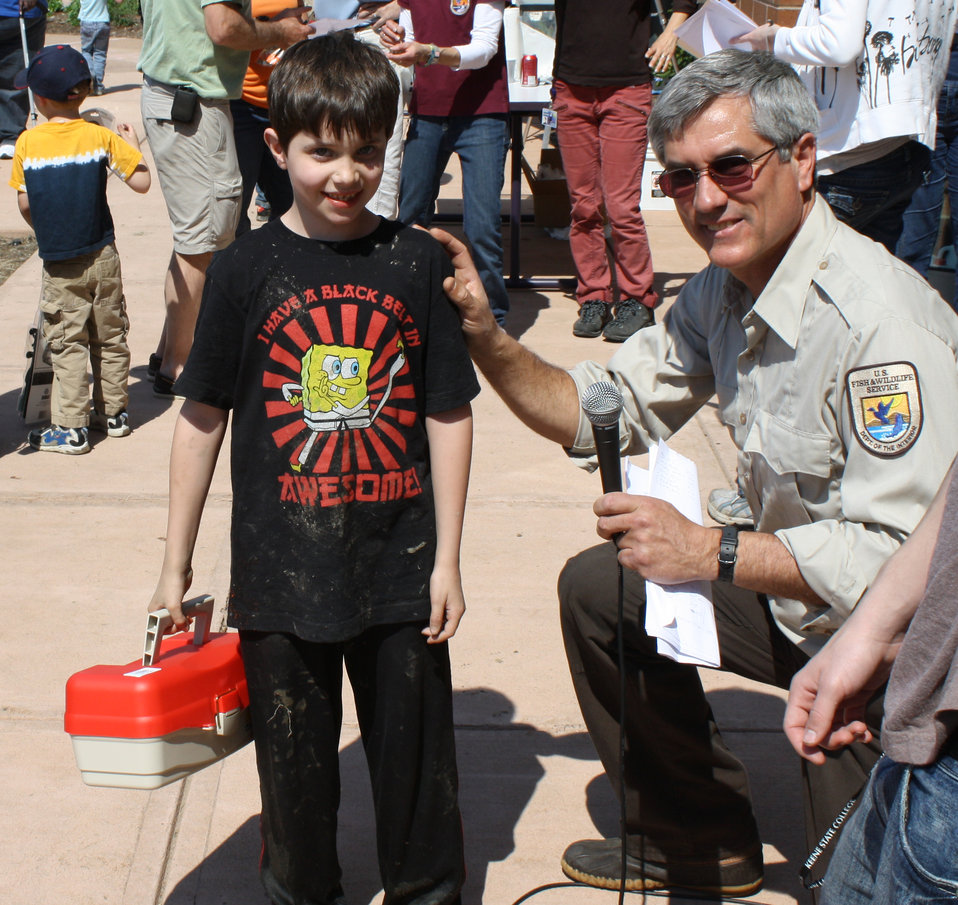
2nd prize middle!

A winner at the USFWS fishing derby in Hadley, MA on May 7th.